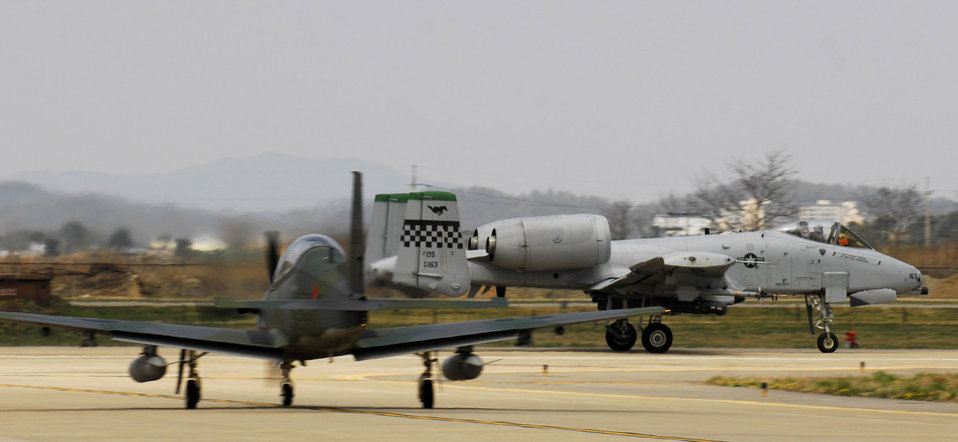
Squadron hosts 'Buddy-Wing' Program

An A-10 Thunderbolt II takes off past a South Korean air force KA-1 during the Buddy Wing Program April 14 at Osan Air Base, South Korea. The 51st Fighter Wing hosted a combined exchange exercise with the participation from the 25th Fighter Squadron here and South Korean air force's 15th Composite Wing from Seoul Air Base.